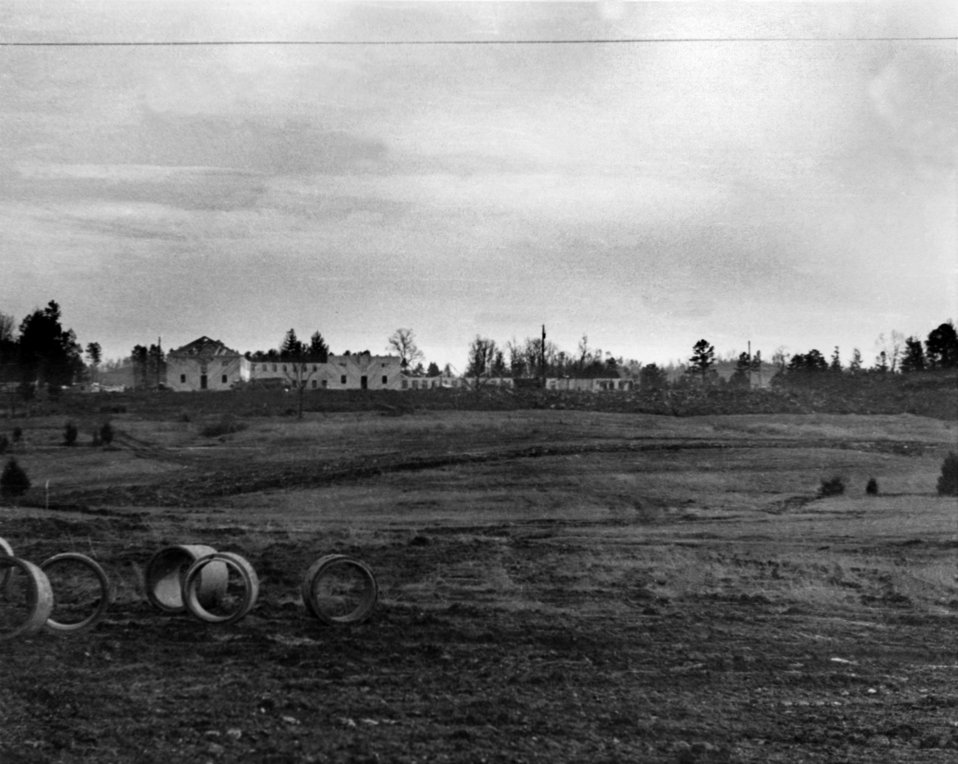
AEC Adm Bldg from main hwy Oak Ridge

3-19 DOE photo by Ed Wescott 1-15-43
Oak Ridge Tennessee